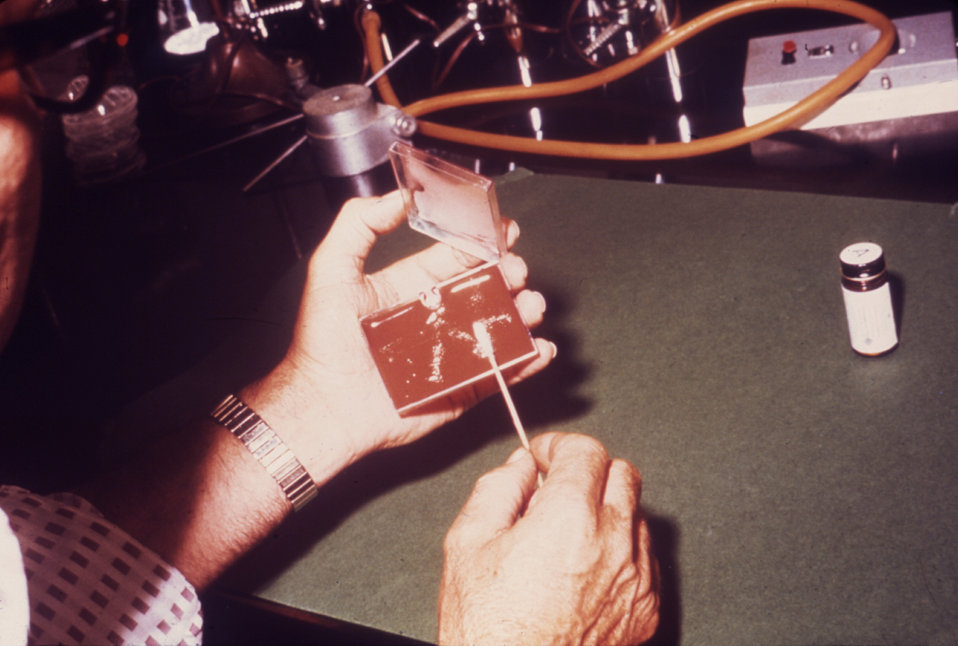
Here a technician is inoculating a gonorrhea culture plate using a cross-streaking pattern.